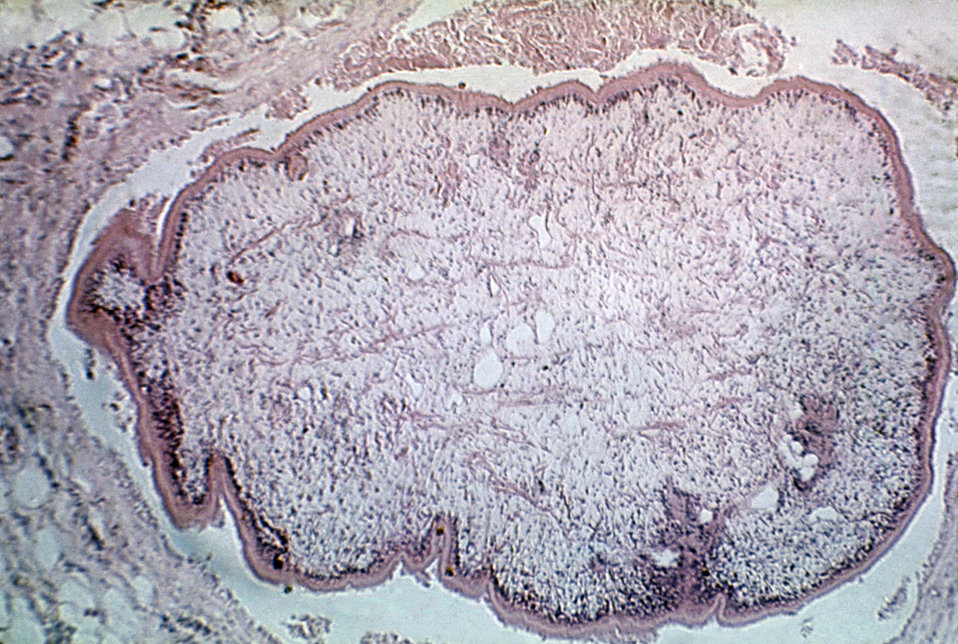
Histopathology of Sparganum proliferum infection. Parasite.